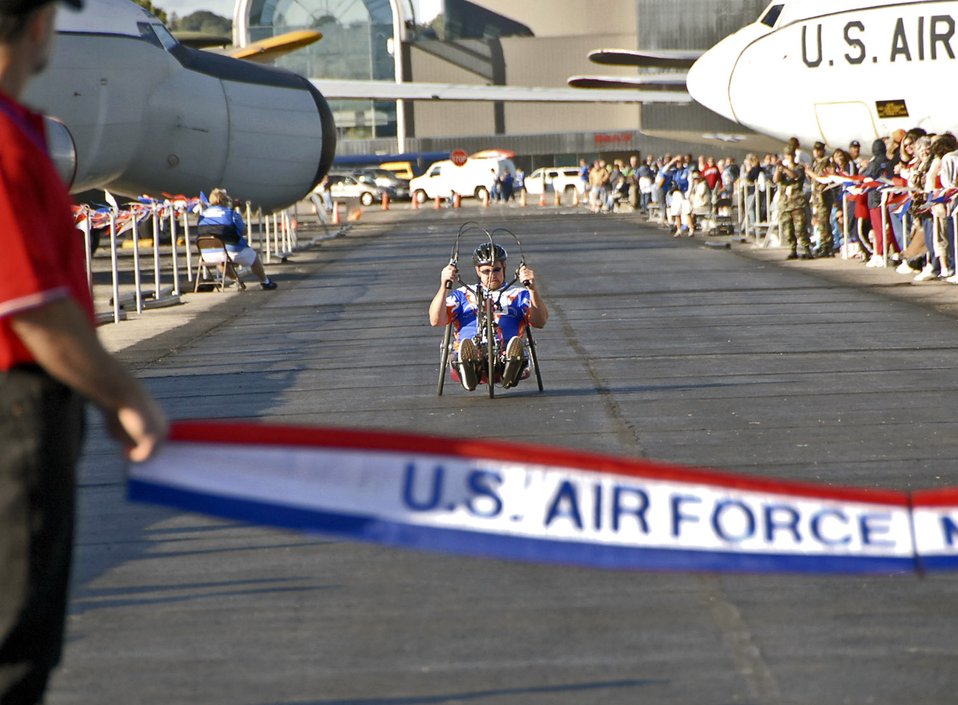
U.S. Air Force Marathon official results announced

Glen Ashlock of Dexter, Mich., approaches the finish line during the U.S. Air Force Marathon Sept. 15 at Wright-Patterson Air Force Base, Ohio. Ashlock won the wheelchair division with a time of 1:54:05.